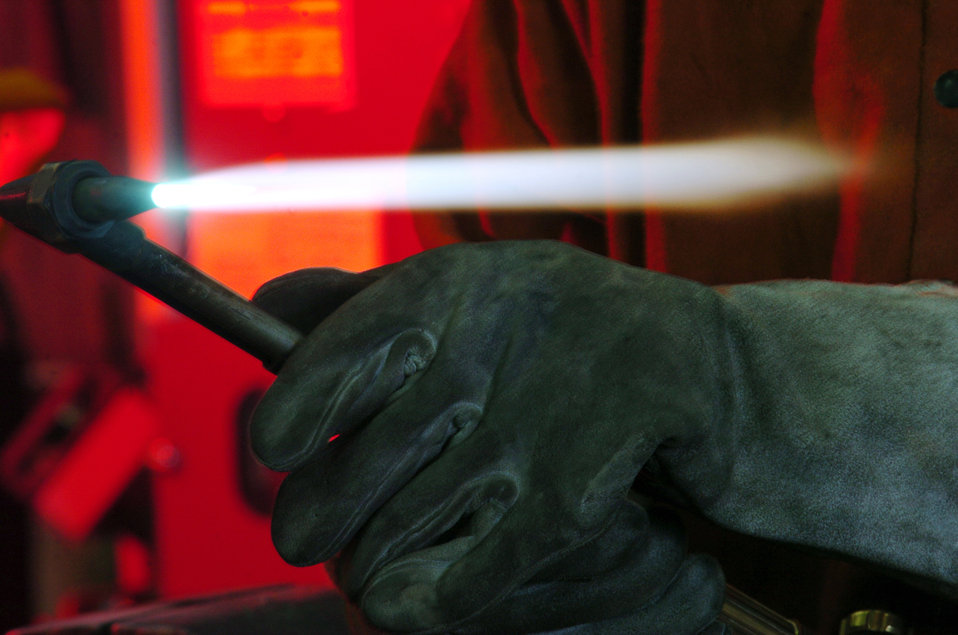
Making the cut

YOKOTA AIR BASE, Japan -- Senior Airman Matthew Nerat lights an acetylene torch. He and other 374th Civil Engineer Squadron Airmen here build, maintain and repair facilities for the Air Force's Western Pacific airlift hub. They also provide engineering, fire protection, environmental planning, housing and utilities for a 1,750-acre base and 12 satellite installations totaling 2,251 acres.